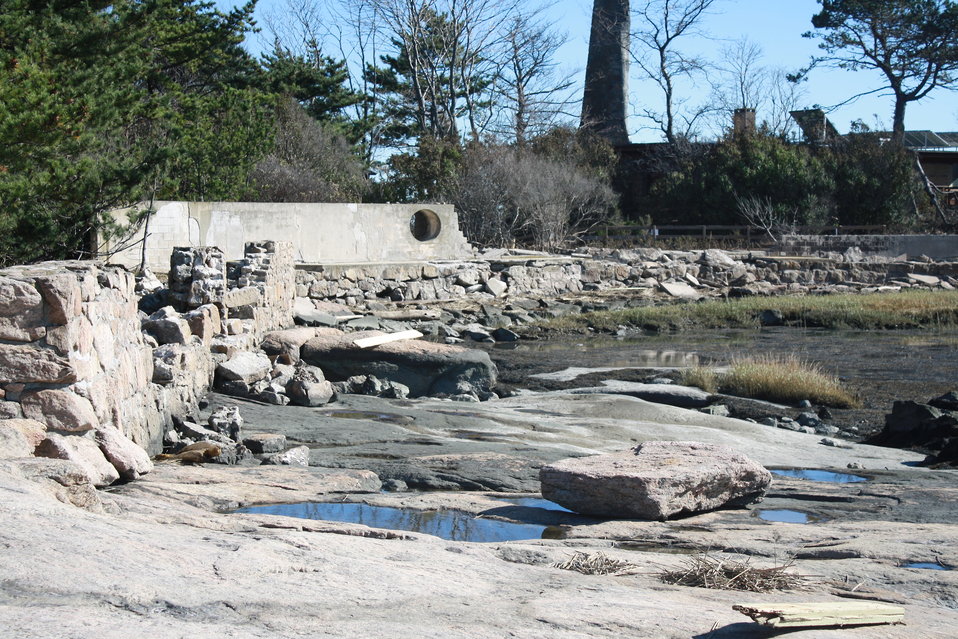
Stewart B. McKinney National Wildlife Refuge (CT)

The south side of Outer Island was damaged after Hurricane Sandy.